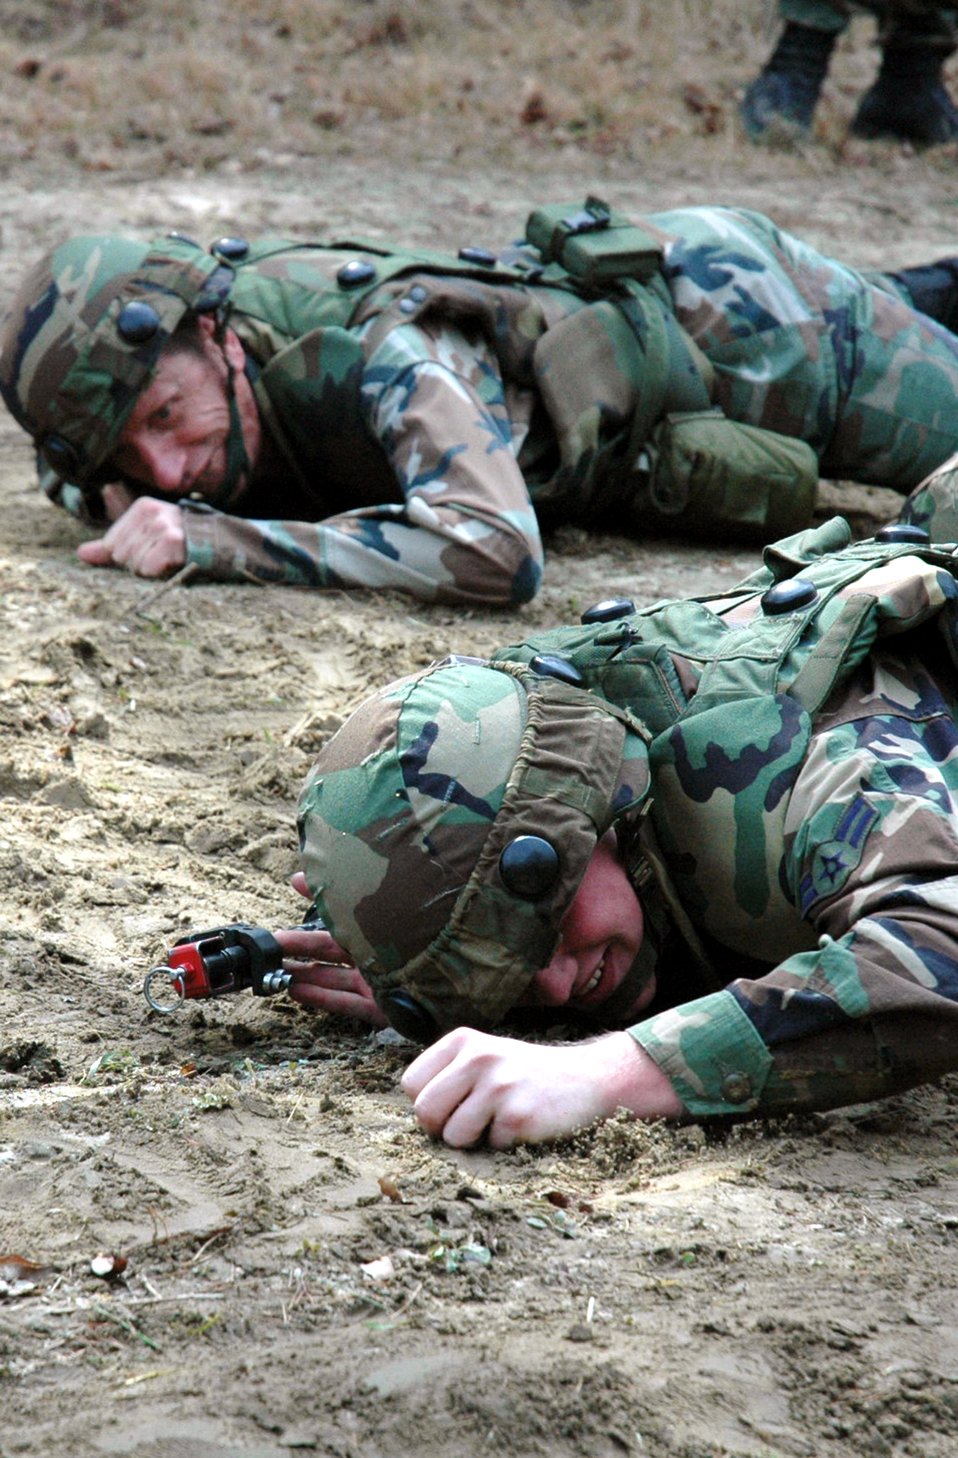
Advanced Contingency Skills Training

Airmen practice low crawling as part of a tactics and patrolling class at the Advanced Contingency Skills Training Course March 14 on a range on Fort Dix, N.J. The course, made up of more than 300 students, prepares Airmen for upcoming deployments through teaching areas such as deployment tactics, patrolling, convoy operations and self defense. The course is taught by the U.S. Air Force Expeditionary Center's 421st Combat Training Squadron.